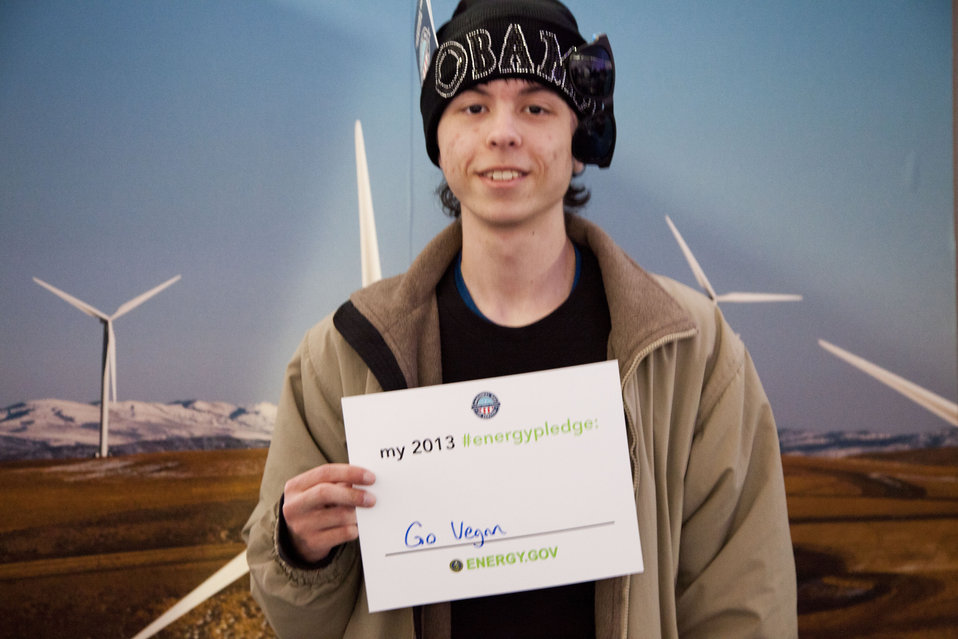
What's your #energypledge?